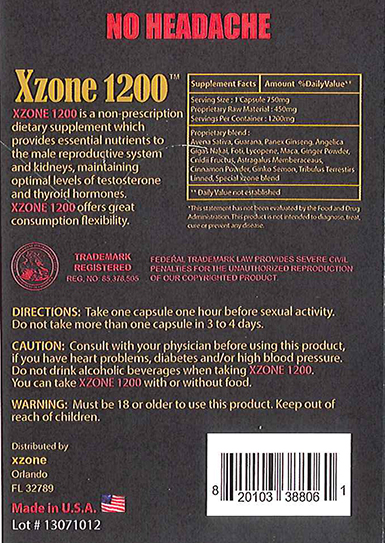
RECALLED – Dietary Supplement

April 1, 2014 – Product Recall – Nova Products, Inc. Issues Voluntary Nationwide Recall of Dietary Supplements with Undeclared Active Pharmaceutical Ingredients.